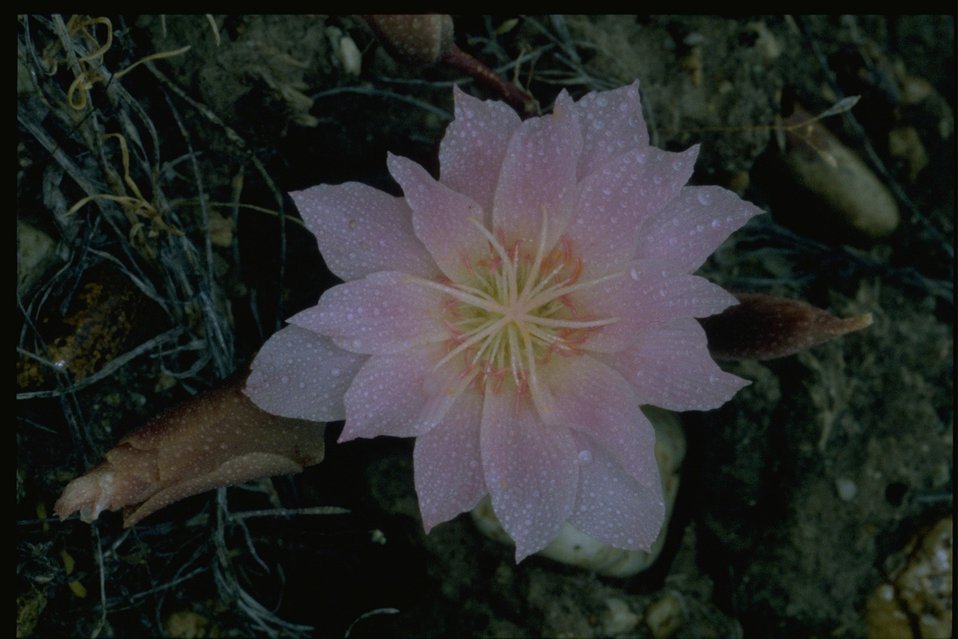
Closeup shot of Bitterroot wildflower.